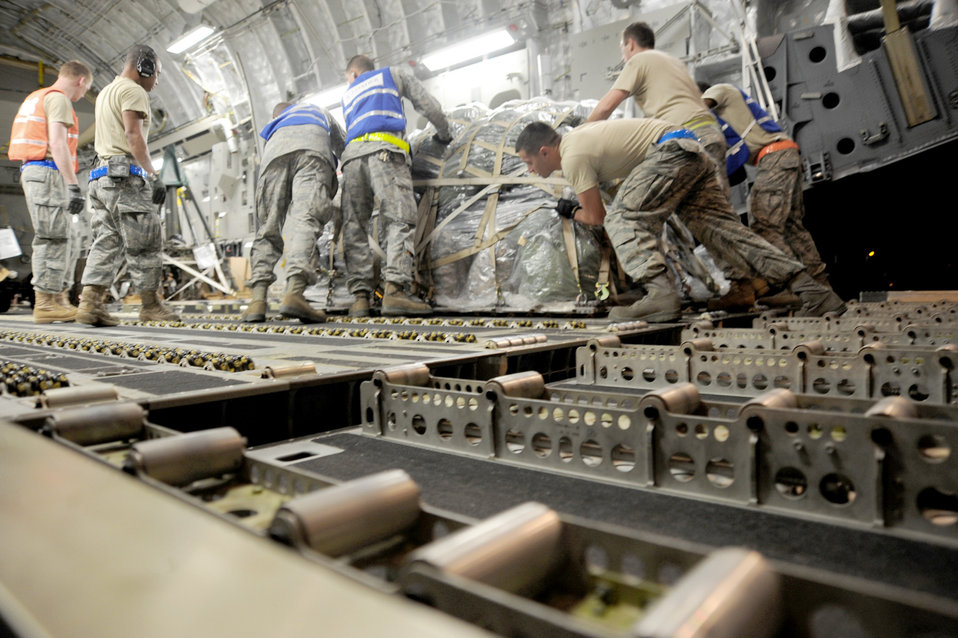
Total-force Airmen simultaneously support worldwide operations

Airmen assignd to the the 22nd Logistics Readiness Squadron load equipment onto a C-17 Globemaster III March 20, 2011, at McConnell Air Force Base, Kan., in support of Operation Odyssey Dawn.